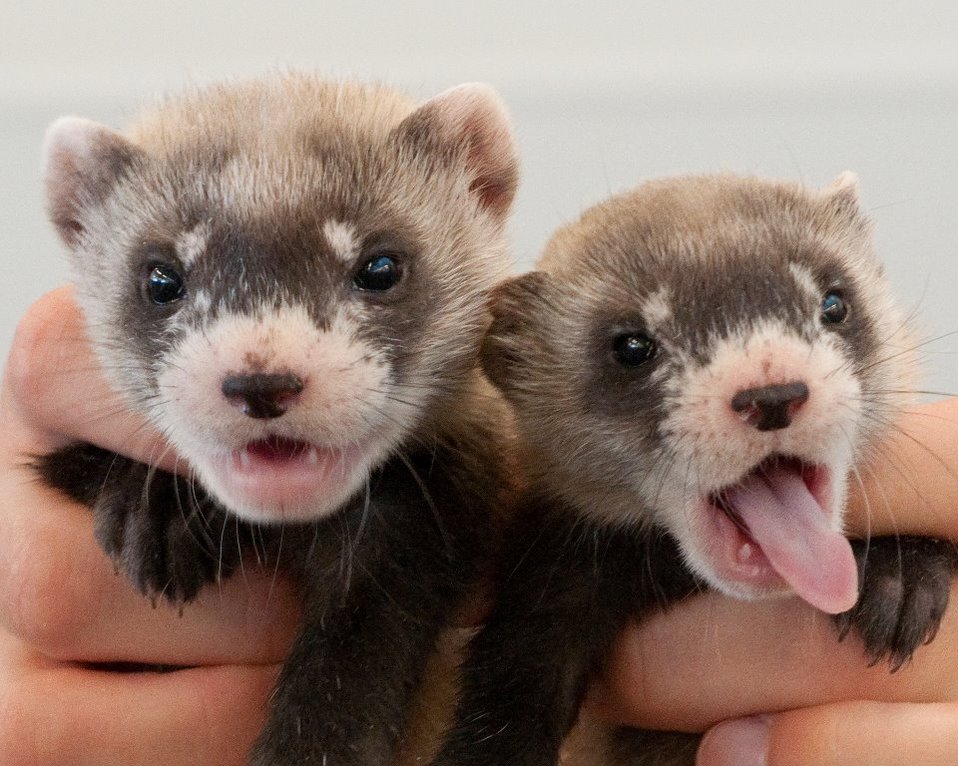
Happy Kits!

Credit: Kimberly Tamkun / USFWS

Photo Contest Entry #200